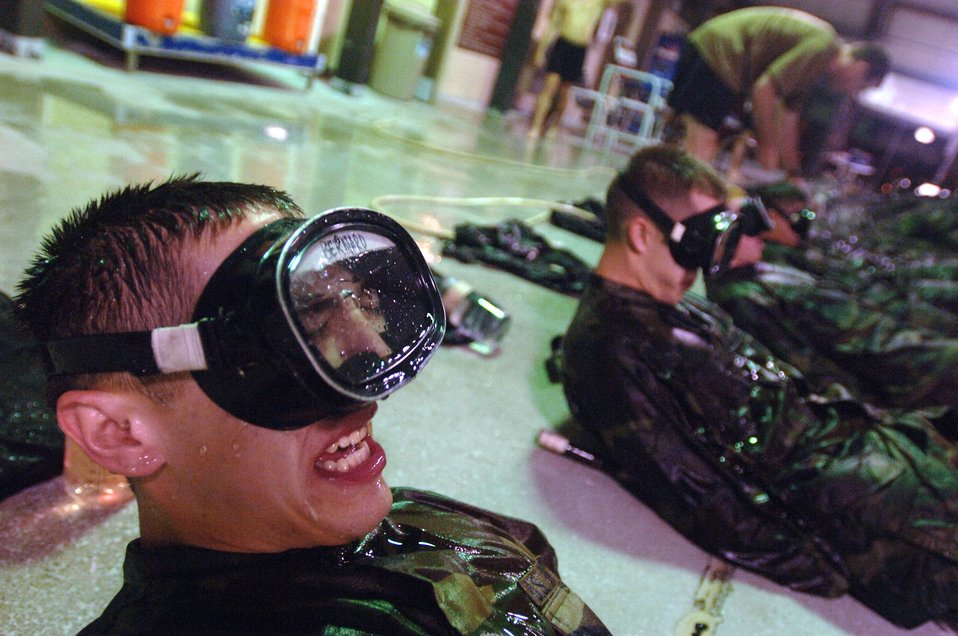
'That others may live'

Airman Basic Matthew Bernard and other pararescue trainees endure water-filled masks while performing more than a thousand flutter kicks at Lackland Air Force Base, Texas, on Thursday, April 6, 2006. The Airmen had already completed 20 hours of non-stop physical training during their extended training day at the pararescue indoctrination course. The 10-week indoctrination training is the first hurdle of intense physical and mental training for pararescue hopefuls. It prepares them for the 12 to 15 months of extreme training they must pass to become Air Force pararescue members.